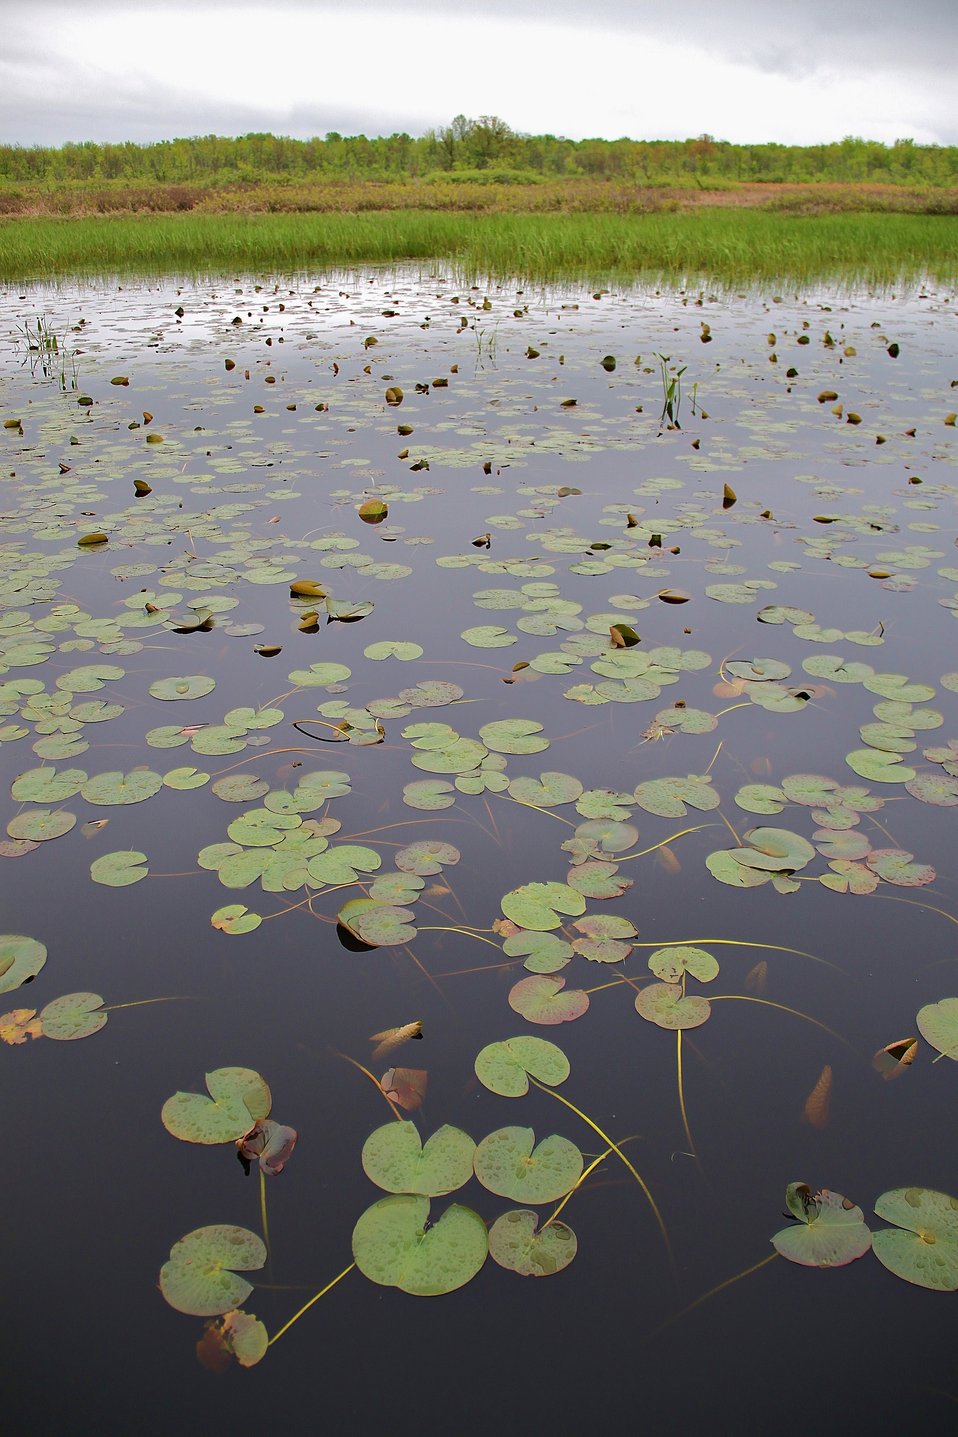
First Creek

Missisquoi National Wildlife Refuge